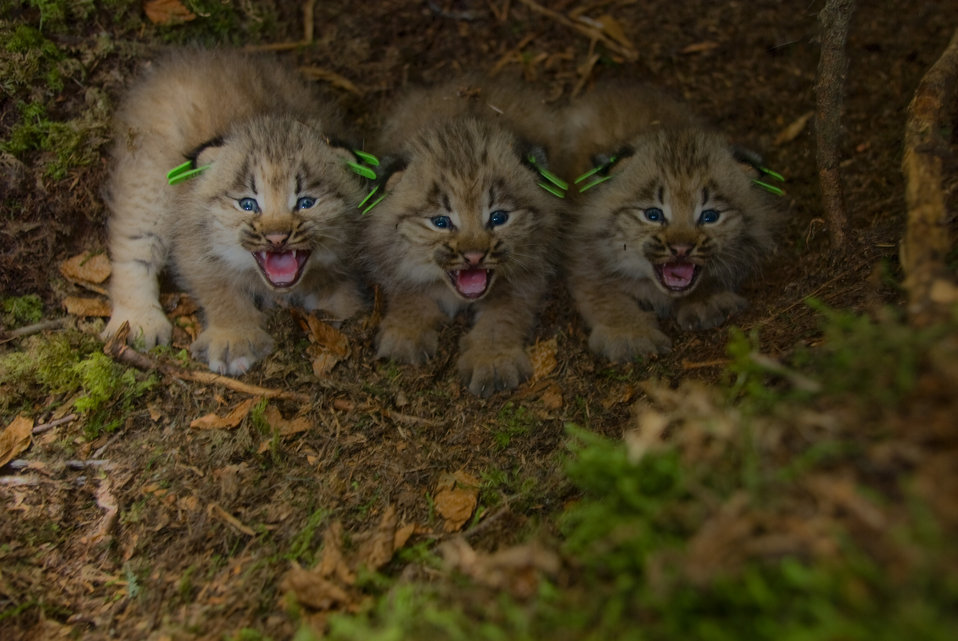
Photo of the Week - Canada Lynx kittens

Photo of the Week - 06/15/2010

Friday's litter of lynx kittens were more than pleased to see the team leave their den.